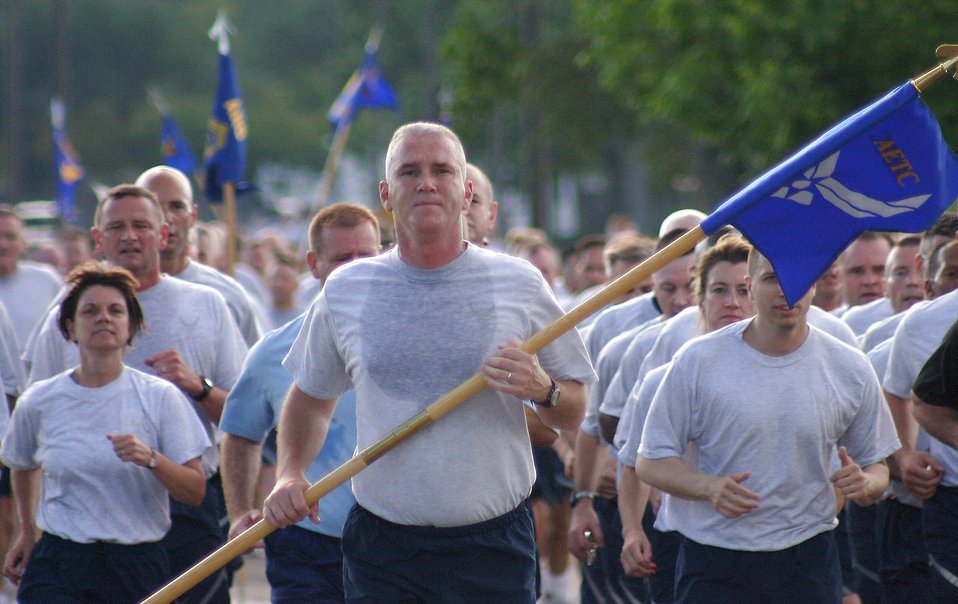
Top leaders unite for senior enlisted summit

Chief Master Sgt. Brooke McLean carries the Air Education and Training Command guidon as he and hundreds of command chief master sergeants, career field managers, professional military education commandants and other key senior enlisted leaders jog down the homestretch of a 2.2-mile formation run May 18 at Maxwell Air Force Base's Gunter Annex in Alabama. The formation run officially kicked off the 2008 Senior Enlisted Leader Summit that brought together the Air Force's senior enlisted leaders in key positions throughout the Air Force to discuss current and future Air Force topics with their peers and senior Air Force officers. Chief McLean is the Little Rock Air Force Base command chief.